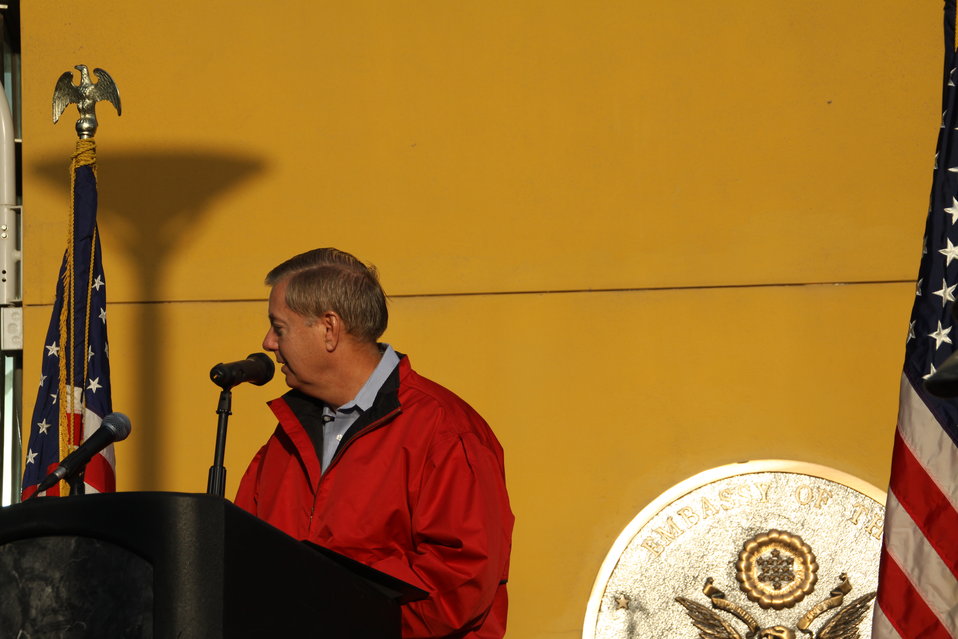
Senator Graham